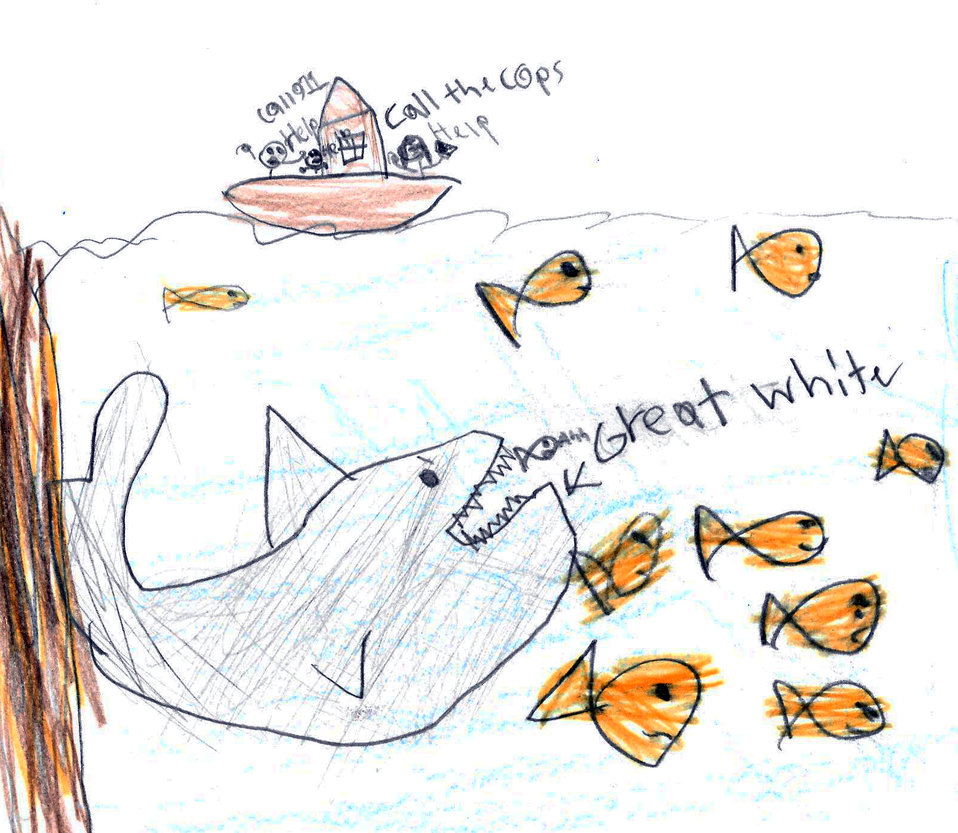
Call the cops!

If day-to-day burdens have caused you to forget the simple joys of nature, consider this delightful cure: thank-you notes written by elementary school students to park rangers in the U.S Army Corps of Engineers Sacramento District.

Great White sightings on inland lakes are not common, but this student learned to call the proper authorities in times of danger.